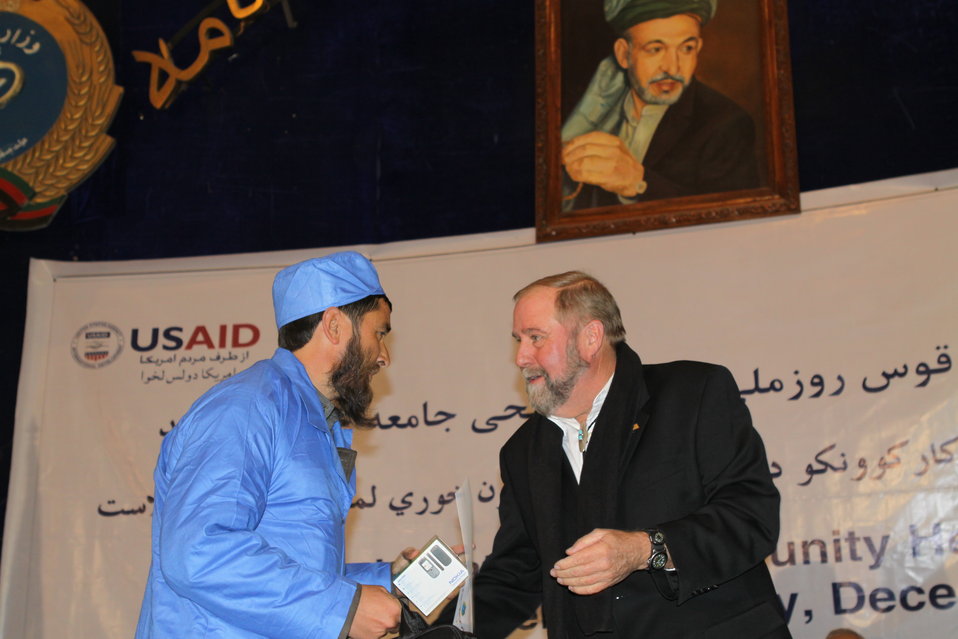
Community Health Workers Celebrated

Kabul, Afghanistan | December 5, 2010 — In support of the United Nations designated International Volunteer Day for Economic and Social Development, Afghanistan’s Ministry of Public Health celebrated its annual Community Health Worker Day today. Acting Minister of Public Health Dr. Suraya Dalil, USAID Senior Deputy Mission Director Robert Hellyer, other government officials, and international donors joined in recognizing the critical contribution of community health workers in Afghanistan and encouraging them to continue their voluntary support to their communities.
The event praised the contributions of the more than 22,000 volunteers throughout the country who deliver community level health-education, counseling, and services out of village health posts located in private homes. The Ministry of Public Health envisioned that community-based healthcare programs will actively encourage communities and families to adopt healthy lifestyles and behaviors, and provide families access to high quality and socially acceptable preventative medicine and life-saving services.
“We have 22,000 community health workers in Afghanistan that are able to implement the basic and standard medicines. They all have been trained through a job description,” said Minister Dalil. Addressing the health workers, she added, “I am proud and feel powerful that I have people like you.”
USAID-funded health projects collaborate closely with the Ministry of Public Health to improve the health and nutritional status of Afghans, provide quality primary healthcare, and promote healthy behaviors at the community and household-levels. USAID supported the training of more than 9,000 of the volunteer community health workers currently working in Afghanistan.
“On behalf of the American people, I congratulate the Community Health Workers for their diligence to gain the skills and knowledge necessary to serve their communities in this important role,” said USAID Senior Deputy Mission Director Hellyer. “USAID strongly supports community based health care and believes that quality community-based health services are essential to reaching Afghanistan’s Millennium Development Goals.”
To support the Basic Package of Health Services, USAID assisted in developing the community health worker training manual, helped train community health worker supervisors and master-trainers, facilitated in-service training, and produced and developed reporting tools, job aids, and education materials.